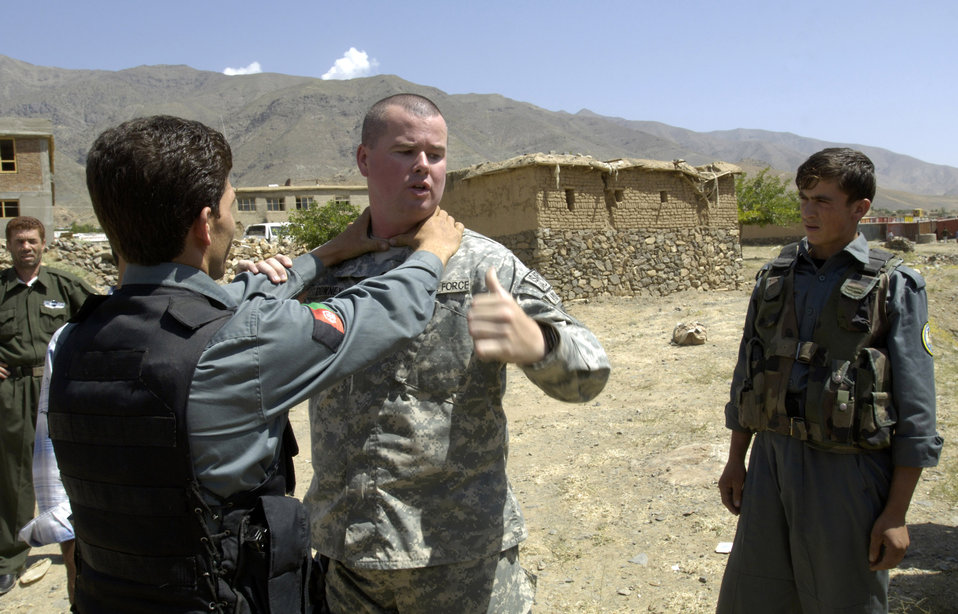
Airmen go hand-to-hand with Afghan National Police

Tech. Sgt. Michael Downey demonstrates how to escape from a choke hold to members of the Afghan National Police Aug. 6. The security forces Airman, a member of the Panjshir Provincial Reconstruction Team, traveled with other PRT members to the Anaba district of Panjshir Province, Afghanistan, to provide training to ANP working in the district. Sergeant Downey is deployed from the Pentagon, Washington, D.C.